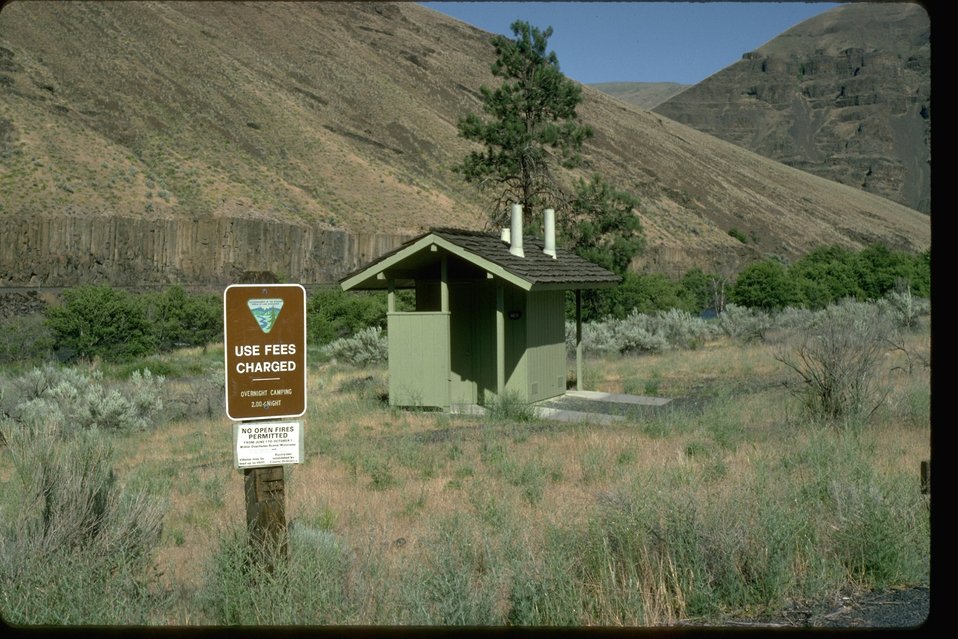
Use Fee sign and an Outhouse along the Lower Deschutes River.